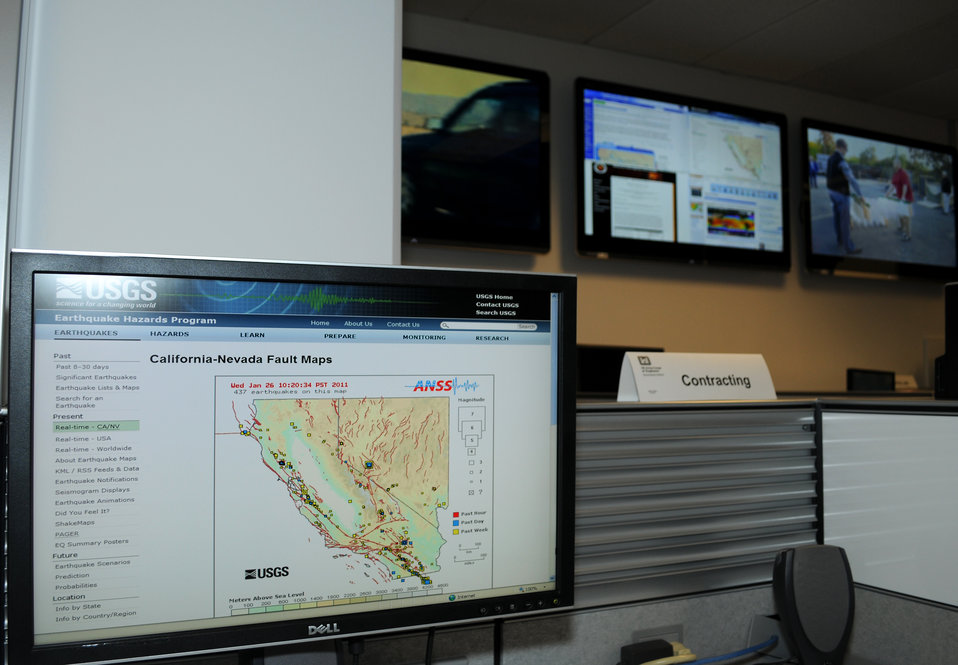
SACRAMENTO, Calif. – A view of a workstation in the U.S. Army Corps of Engineers Sacramento District’s new emergency operations center, housed at its headquarters building here. The new EOC was showcased to district employees during an open house event Jan. 26. Comprised of 14 workstations - including a command workstation; six permanent staff workstations and the chief office; a conference room with video teleconferencing capabilities and six television sets monitoring weather, flood, hurricane, fire and earthquake websites, and news stations - the new EOC was designed to support the district’s around-the-clock response to disasters.